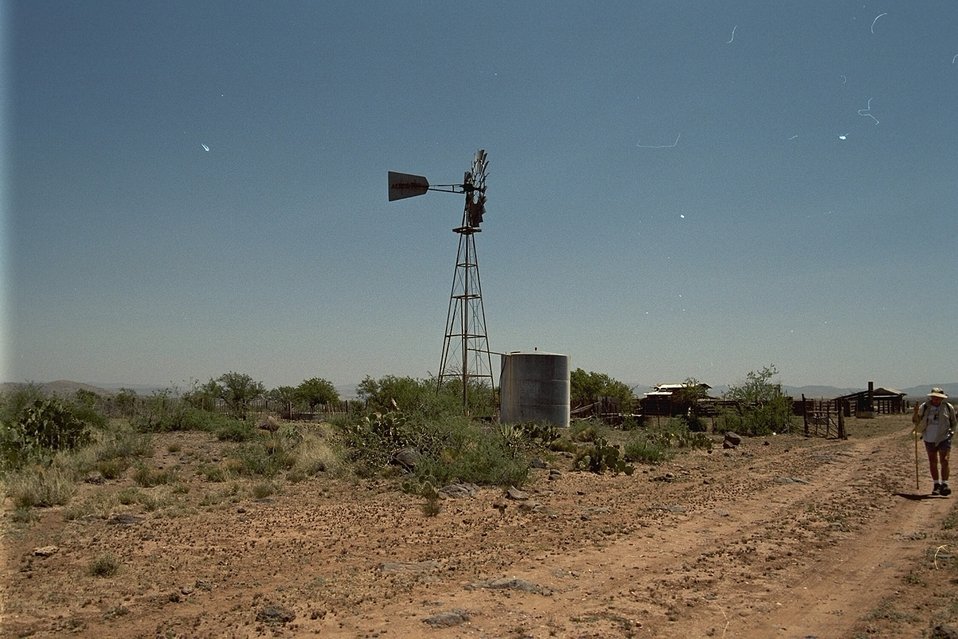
A windmill just beyond Sunset Point in the Agua Fria National Monument.